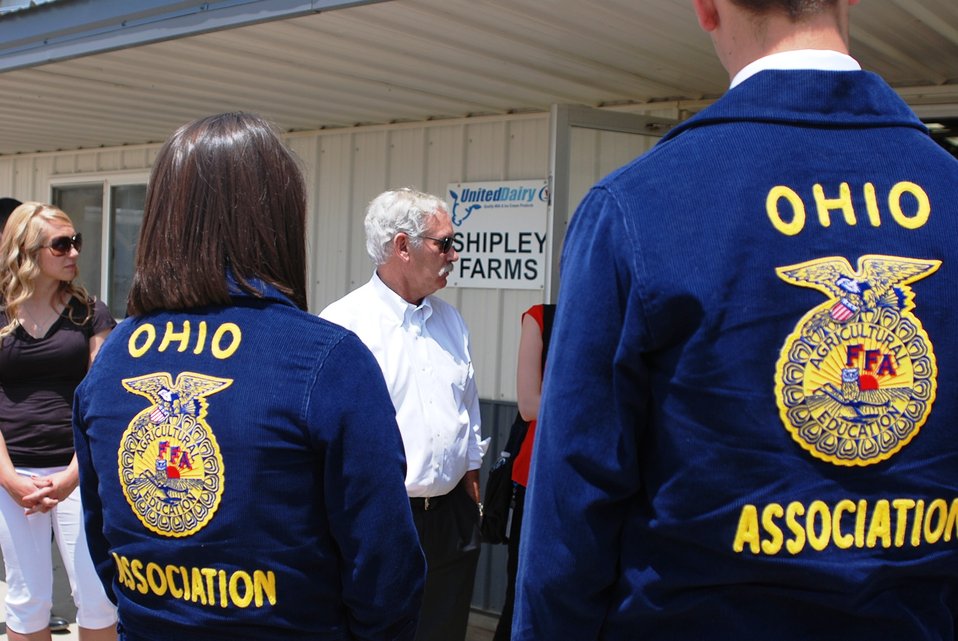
Agriculture Acting Deputy Secretary Michael Scuse visits the Shipley Farm in Newark,OH on Thursday, May 30, 2013.